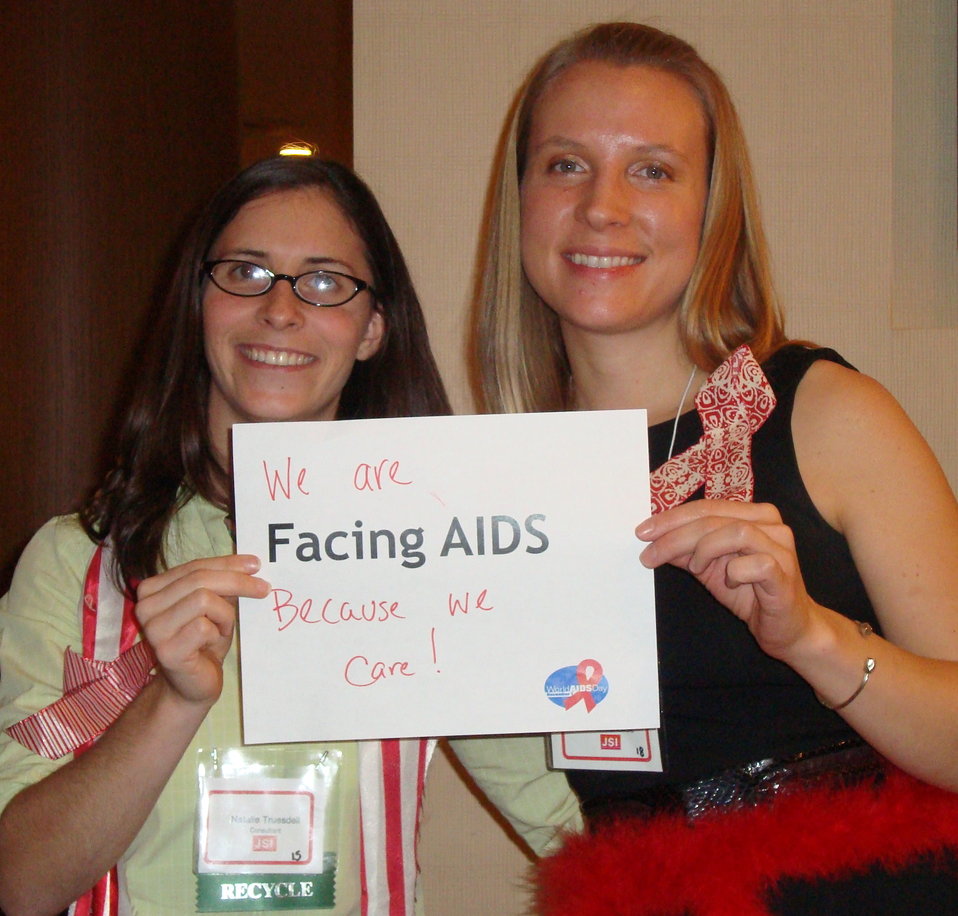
FacingAIDSCampaign 034